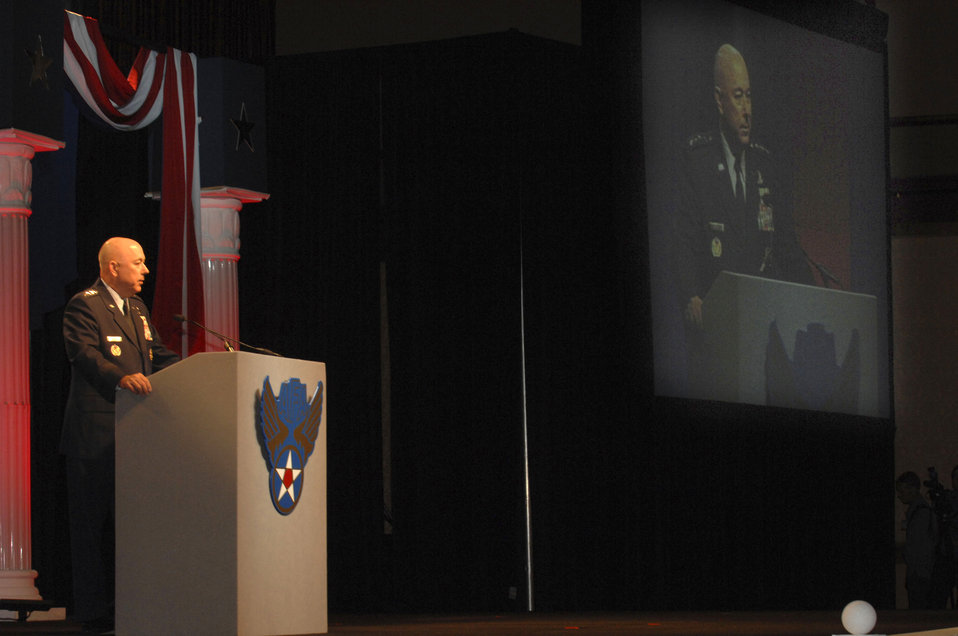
Air Force Association conference under way

Air Force Chief of Staff T. Michael Moseley delivered the opening remarks to Air Force leaders and supporters of the 12 Outstanding Airman who were gathered at the Air Force Association's Air & Space Conference and Technology Exposition on Sept 24 in Washington D.C. The conference will last for three days and will cover the newest technology and also have career enhancement seminars.